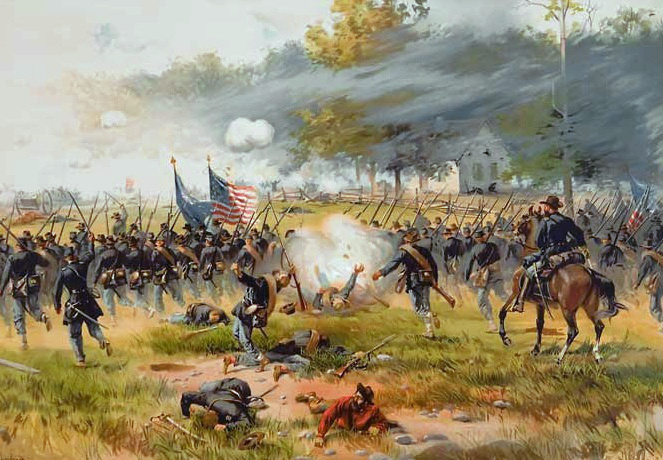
Battle of Antietam, specifically, the charge of Iron Brigade near the Dunker Church, on the morning of September 17, 1862. Chromolithograph by Louis Prang and Company of an original painting by Thure de Thulstrup.